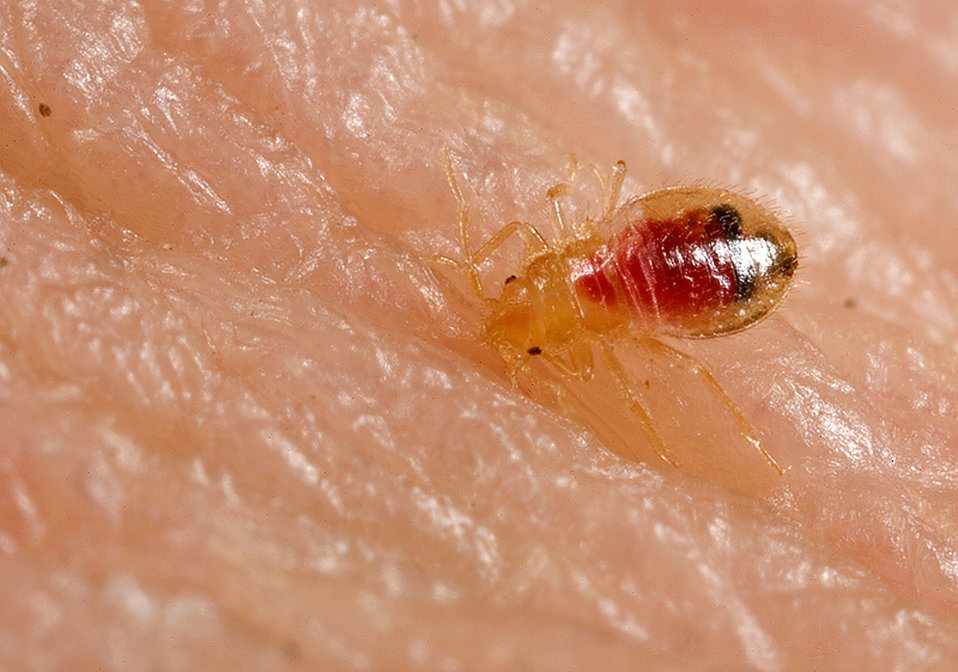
This 2006 photograph depicted a dorsal view of a bedbug nymph, Cimex lectularius, as it was in the process of ingesting a blood meal from the arm of a 'voluntary' human host, which could be seen filling the insect's abdomen.Bedbugs are not vectors in nature of any known human disease. Although some disease organisms have been recovered from bedbugs under laboratory conditions, none have been shown to be transmitted by bedbugs outside of the laboratory.The common bedbug is found worldwide. Infestations are common in the developing world, occurring in settings of unsanitary living conditions and severe crowding. In North America and Western Europe, bedbug infestations became rare during the second half of the 20th century and have been viewed as a condition that occurs in travelers returning from developing countries. However, anecdotal reports suggest that bedbugs are increasingly common in the United States, Canada, and the United Kingdom.